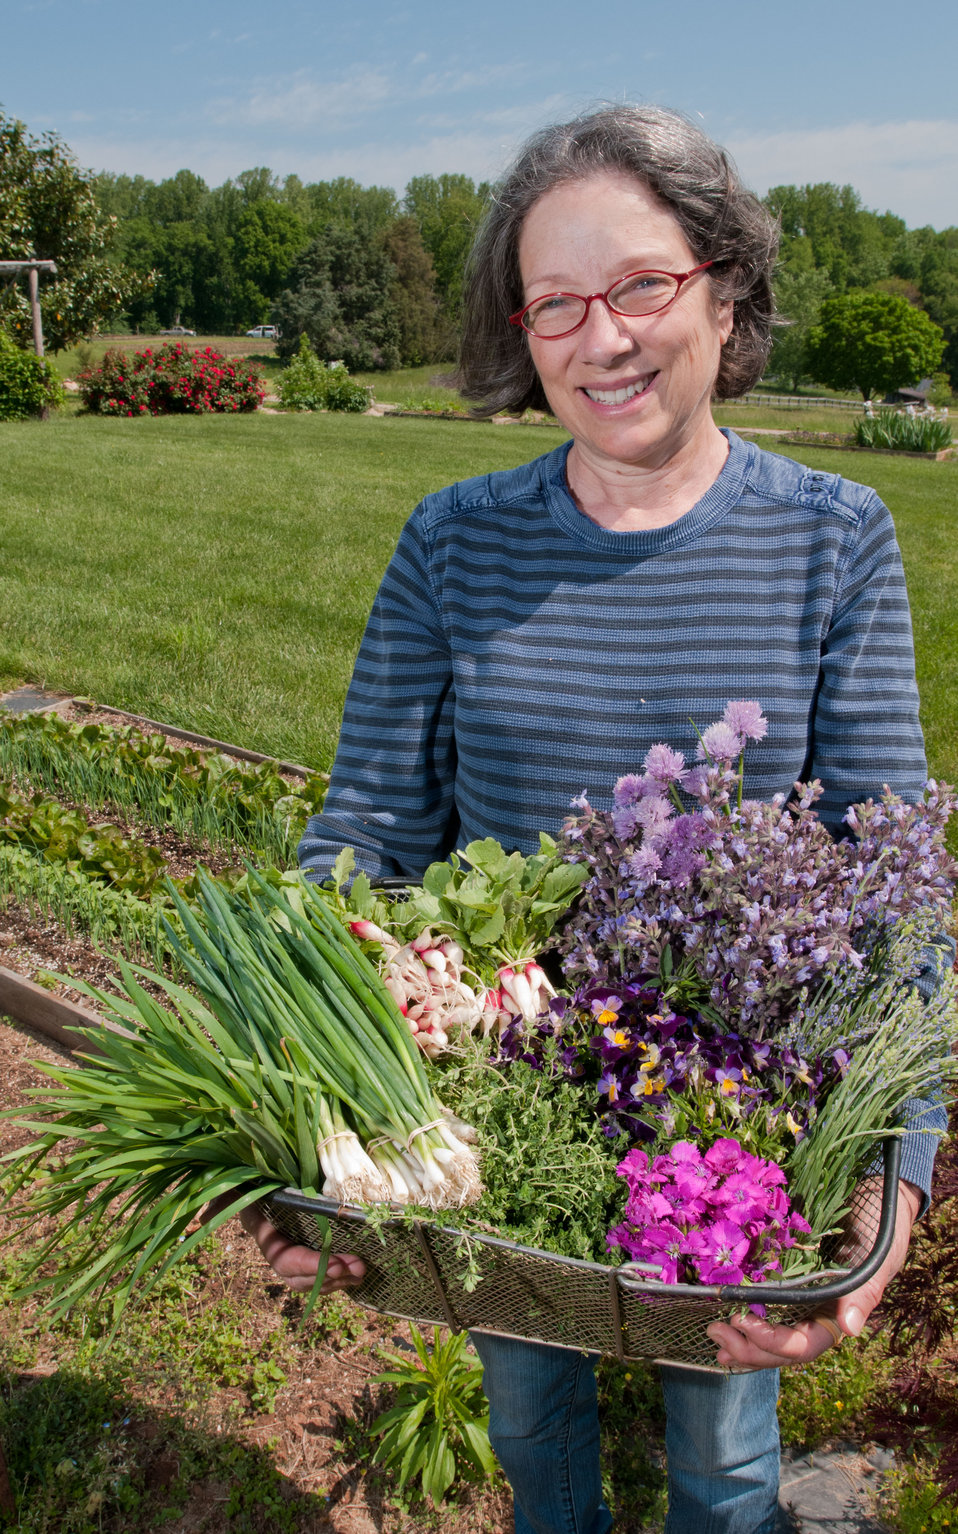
Owner Jo Pendergraph of the Manakintowne Specialty Growers on Friday, May 6, 2011. They raise specialty produce for chefs and markets of Richmond, Charlottesville and Williamsburg, VA area, on a 21-acre farm in Powhatan County, Virginia. The online food hub Lulus Local Food is served by the Fall Line Farms cooperative. This is one of the farms that chefs get those seemingly unique greens such as French Sorrel, Pea Shoots, Frisee, Tat soi, Mizuna, Pink/green radish shoots, Sunflower shoots, Baby red mustard, Tuscan Kale, Beet greens. All harvested by hand and scissors, micro greens such as Pak choi, Tat soi, Mizuna, Purple kohlrabi, Shungiku (edible chrysanthemum), Ruby chard, Purple/Daikon/Triton radish, Red amaranth and Bull's Blood Beet. To be enjoyed by the eyes and mouth, edible flowers such as African Blue Basil, Nasturtiums, Johnny Jump Ups, and Chive blossoms Dianthus (pinks) are grown here. The seasonal choices are listed by suppliers and ordered by members on Lulus Local Food website, the food is distributed to pick-up points in the Richmond area. Together, they offer a wide variety of household food staples and specialty fruits, vegetables, meats, soaps, eggs, cheeses, flowers, honey, pastas, sauces, syrups, baked goods, mushrooms, flour and grains from and for the Richmond area.